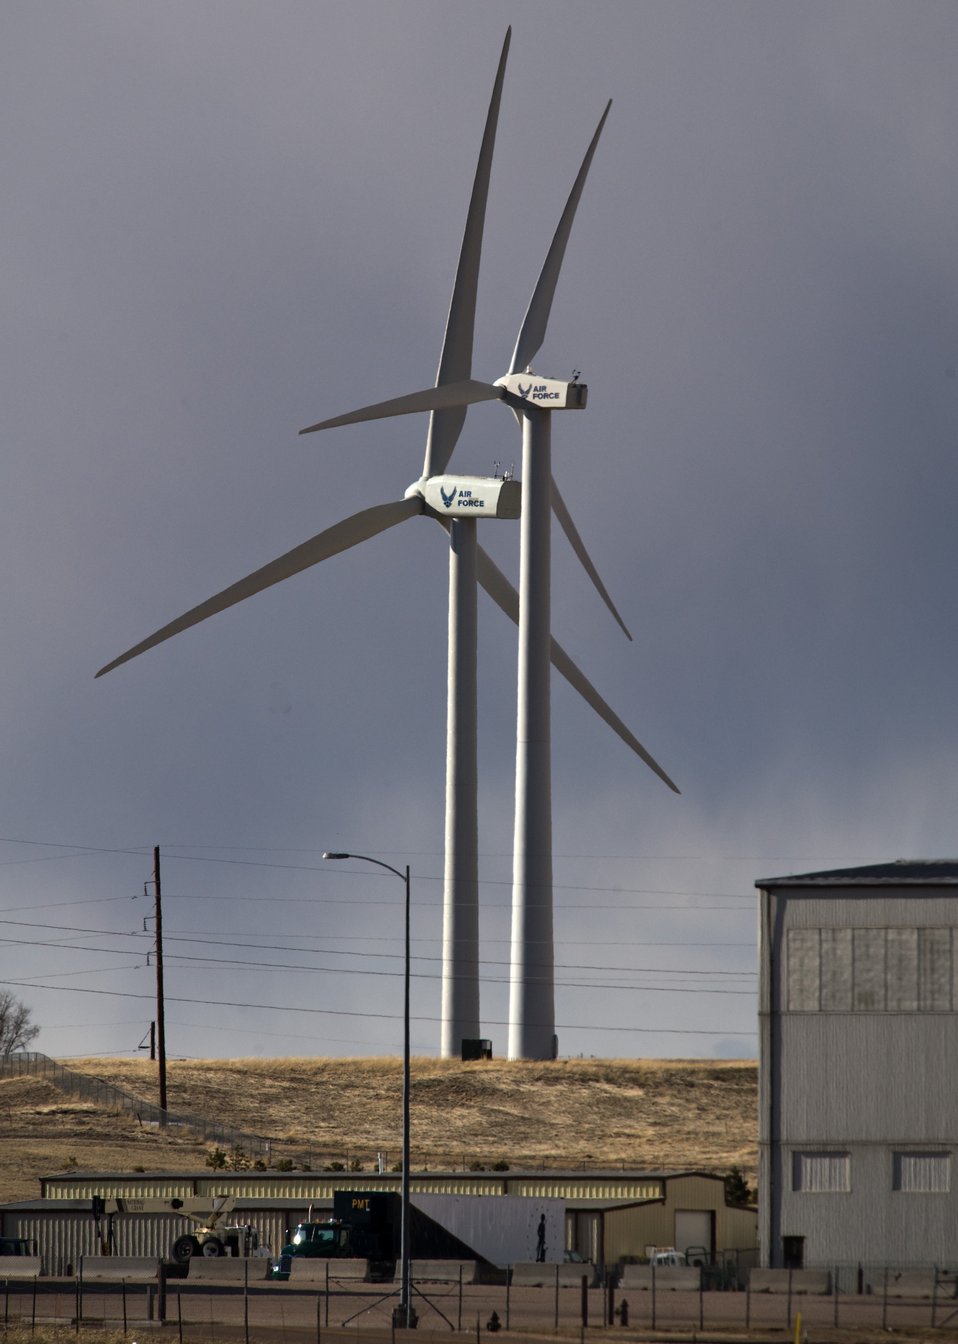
Winds of Energy

The biggest and newest (left) of two types wind turbines at F.E. Warren Air Force Base, Wyoming faces the wind coming across the high plains and push against the clouds that later dropped light snow on the base and surrounding city of Cheyenne on April 6, 2010. The larger wind turbine was completed and online early in 2009 and is rated at 2 mega watts of electrical energy that goes directly into the base power grid. The other two smaller wind turbines produces a combined output of 1.3MW. From most points on the base the wind turbines can be seen. At its base the blades make a low whoosh sound.